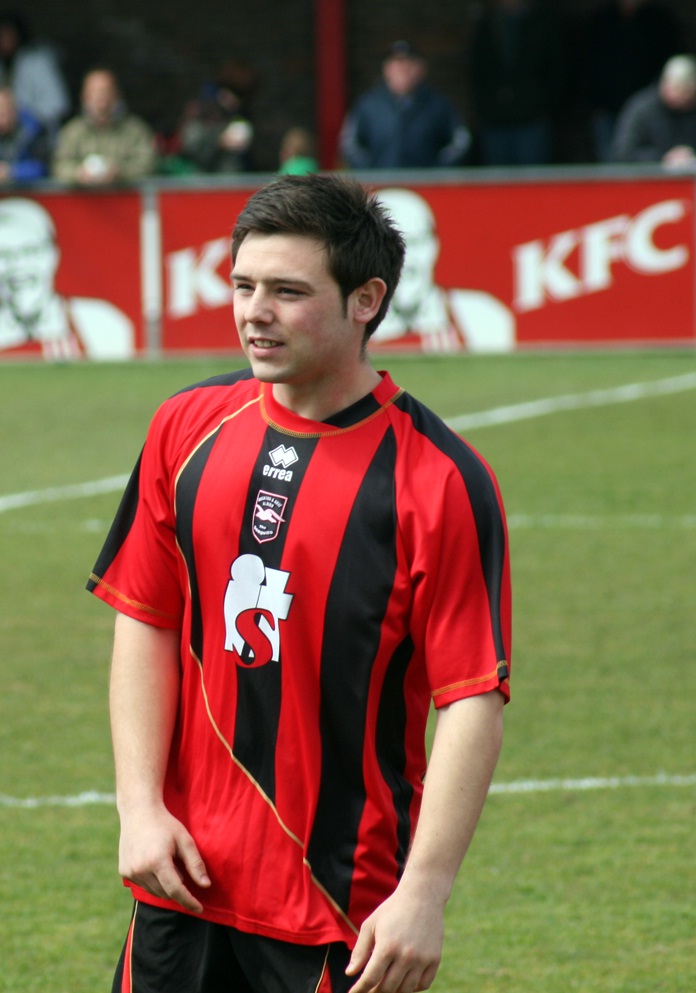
Jamie Smith featuring during a Brighton & Hove Albion reserve match.